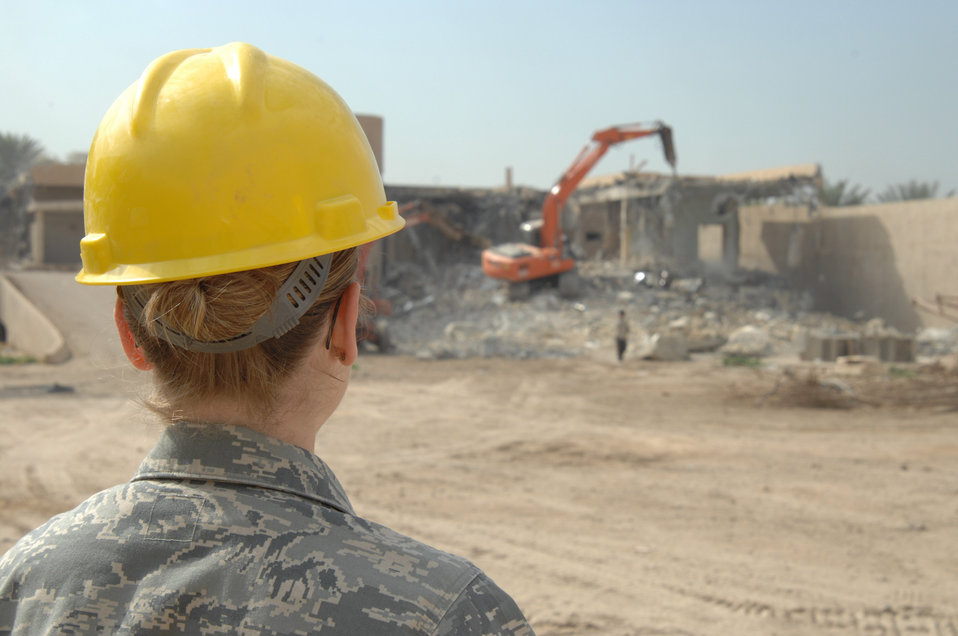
Airman helps Iraqis bury past, rebuild future

Capt. Michelle Sterling looks on while one of the three villas, once belonging to bath party members is demolished once belonging to Ba'ath party members is being demolished in March in Iraq. The villas are now being demolished to make room for a new foreign embassy. Captain Sterling is the Joint Area Support Group-Central project payment officer.